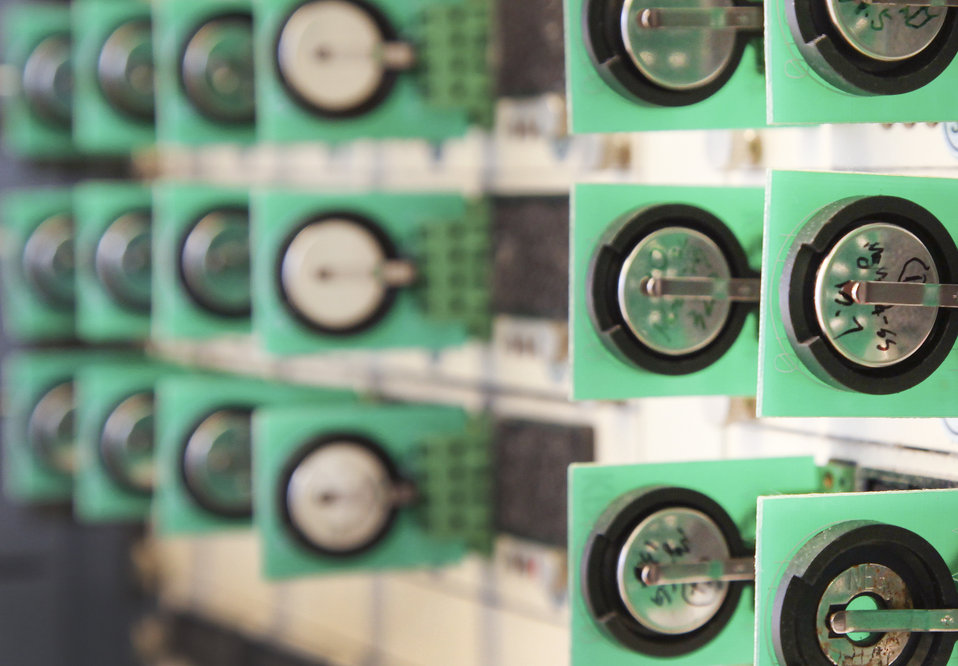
Better batteries may get to market sooner with help from a new R&D manufacturing facility at Oak Ridge National Laboratory.

The facility feature's two chambers totaling 1,400 square feet of space along with state-of-the -art battery manufacturing equipment. One chamber allows researchers to maintain relative humidity levels of between 0.5 and 15 percent. The room houses equipment that allows for mixing of various slurries, stabilization, and coating and drying. The second chamber provides a dew point of minus-40 degrees Celsius, which translates to a relative humidity of 0.5 percent. This is necessary to prevent moisture from entering and degrading battery cells. The pouches are then trimmed and sealed through a heating and vacuum process.